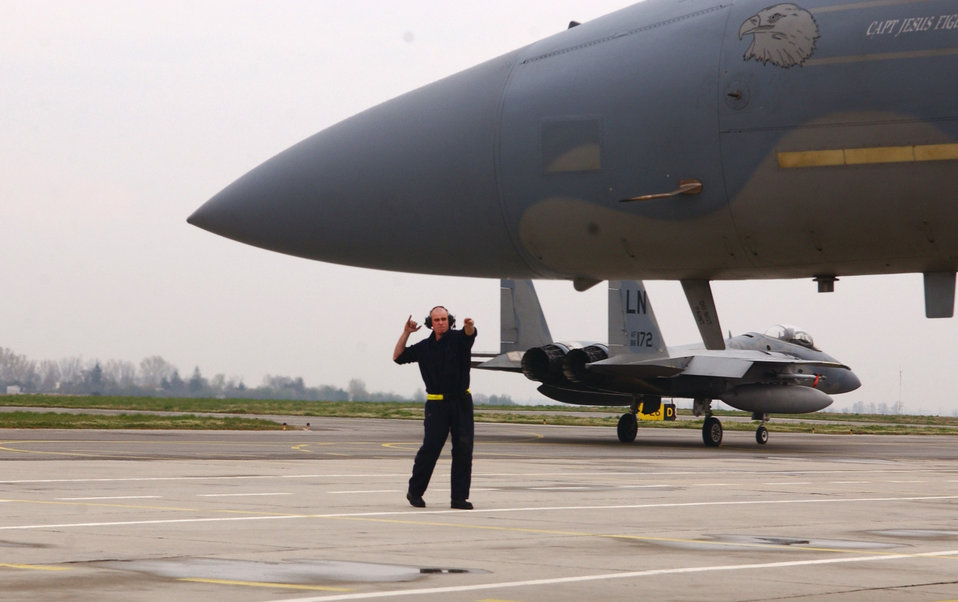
Lakenheath Airmen support NATO summit

Airman 1st Class Daniel Addabbo marshals an F-15 Eagle for an Operation Noble Endeavor mission April 1 at Graf Ignatievo Air Base, Bulgaria. F-15s deployed from Royal Air Force Lakenheath, England, are projecting airpower in support of the NATO summit in Bucharest, Romania. Airman Addabbo is a 493rd Expeditionary Fighter Squadron assistant crew chief.